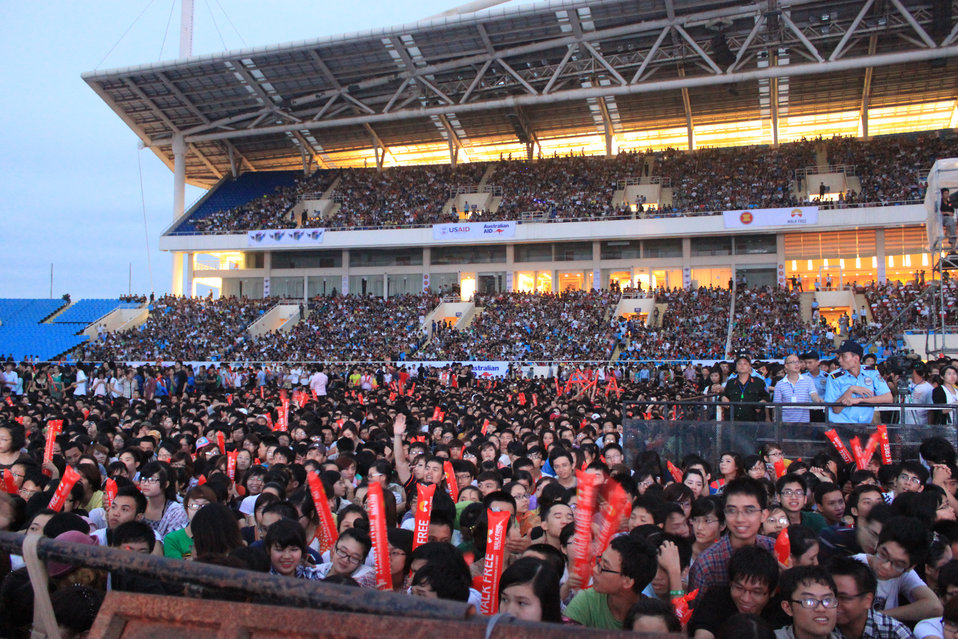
A massive crowd of fans are thrilled at the MTV EXIT concert in Hanoi against human trafficking

A great concert that attracts 40,000 fans in My Dinh Stadium in Hanoi with strong messages against human trafficking.